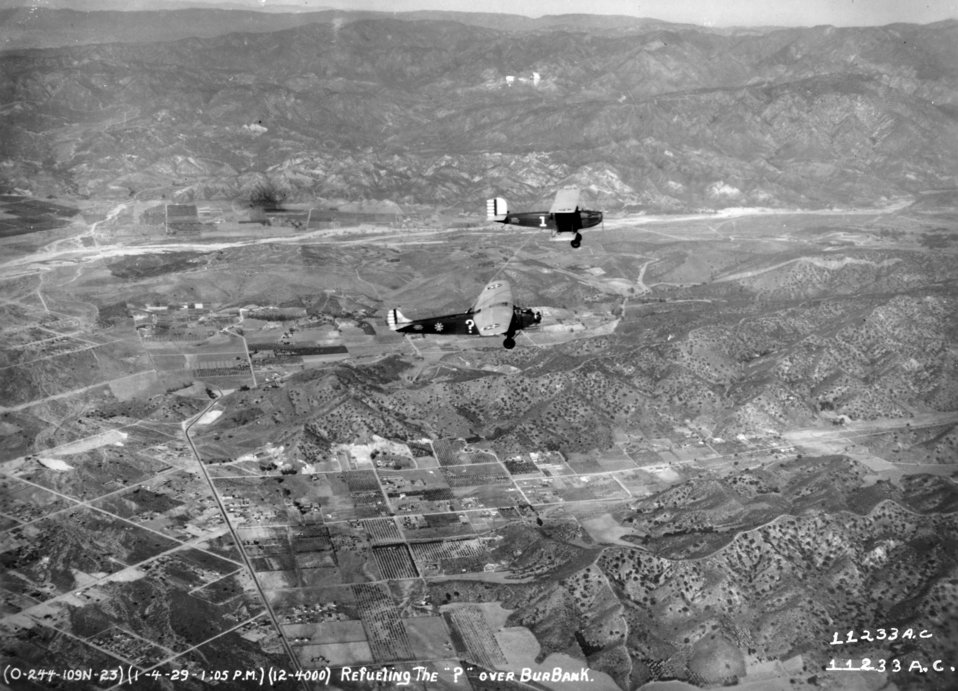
Tankers: From a Question Mark to today's fight

A Fokker C-2A is refueled in flight by a modified Douglas C-1 transport aircraft during an operation dubbed